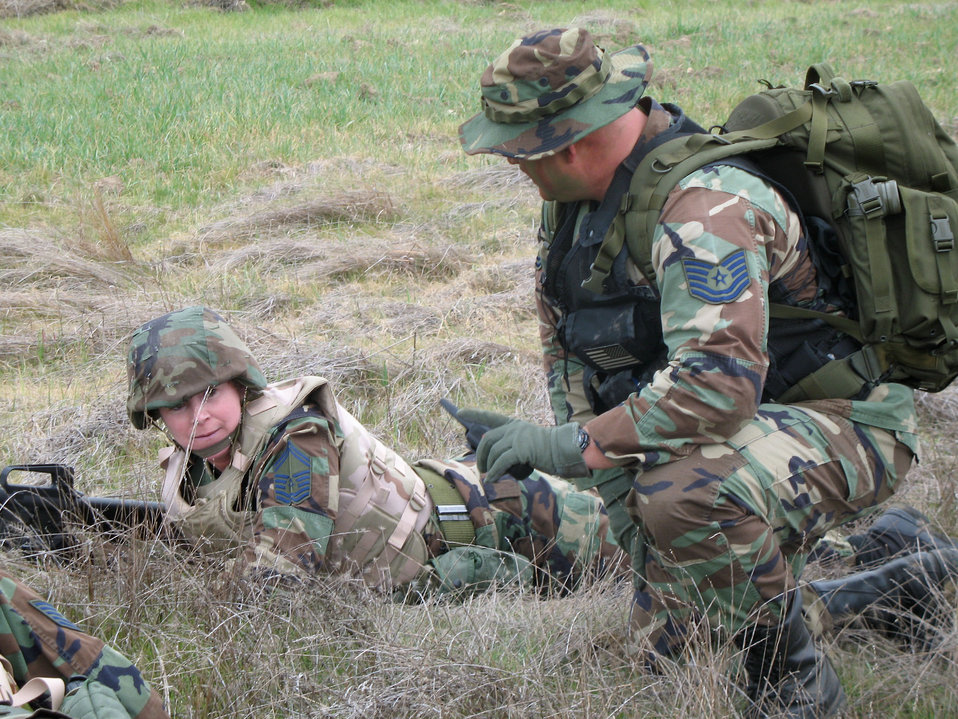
Combat skills training prepares security forces

Tech. Sgt. Tyler Brown (kneeling) instructs Senior Master Sgt. Martha Wilkinson during expeditionary combat skills training at Travis Air Force Base, Calif. The training helps prepare Airmen for Air Expeditionary Force deployments. Sergeant Brown is assigned to the 60th Security Forces Squadron, and Sergeant Wilkinson is an air traffic controller at Travis AFB.